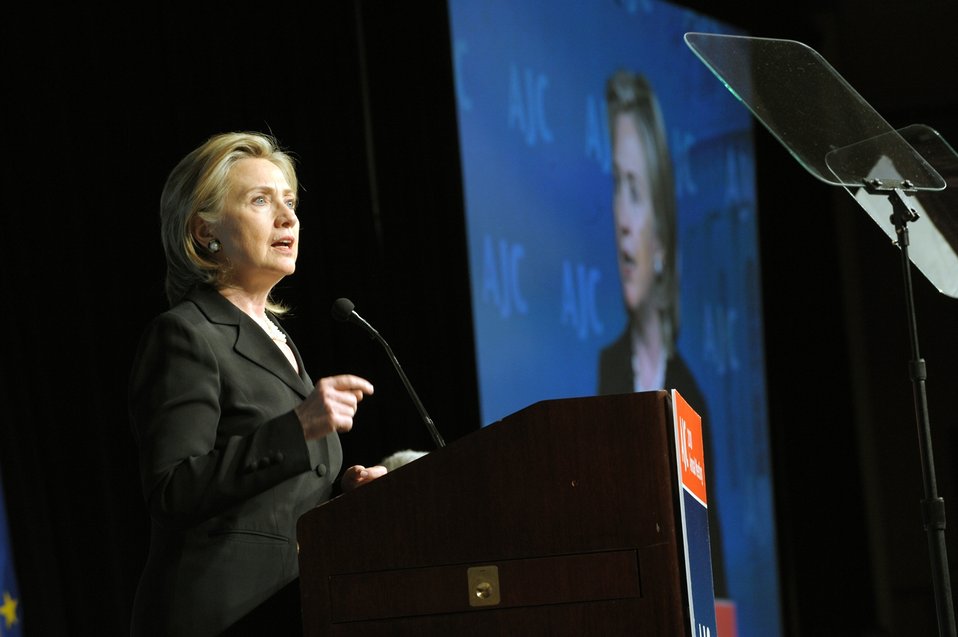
Secretary Clinton Speaks at the American Jewish Committee’s Gala Dinner

U.S. Secretary of State Hillary Rodham Clinton gives remarks at the American Jewish Committee Gala Dinner at the Grand Hyatt Hotel, Washington, DC, April 29, 2010.